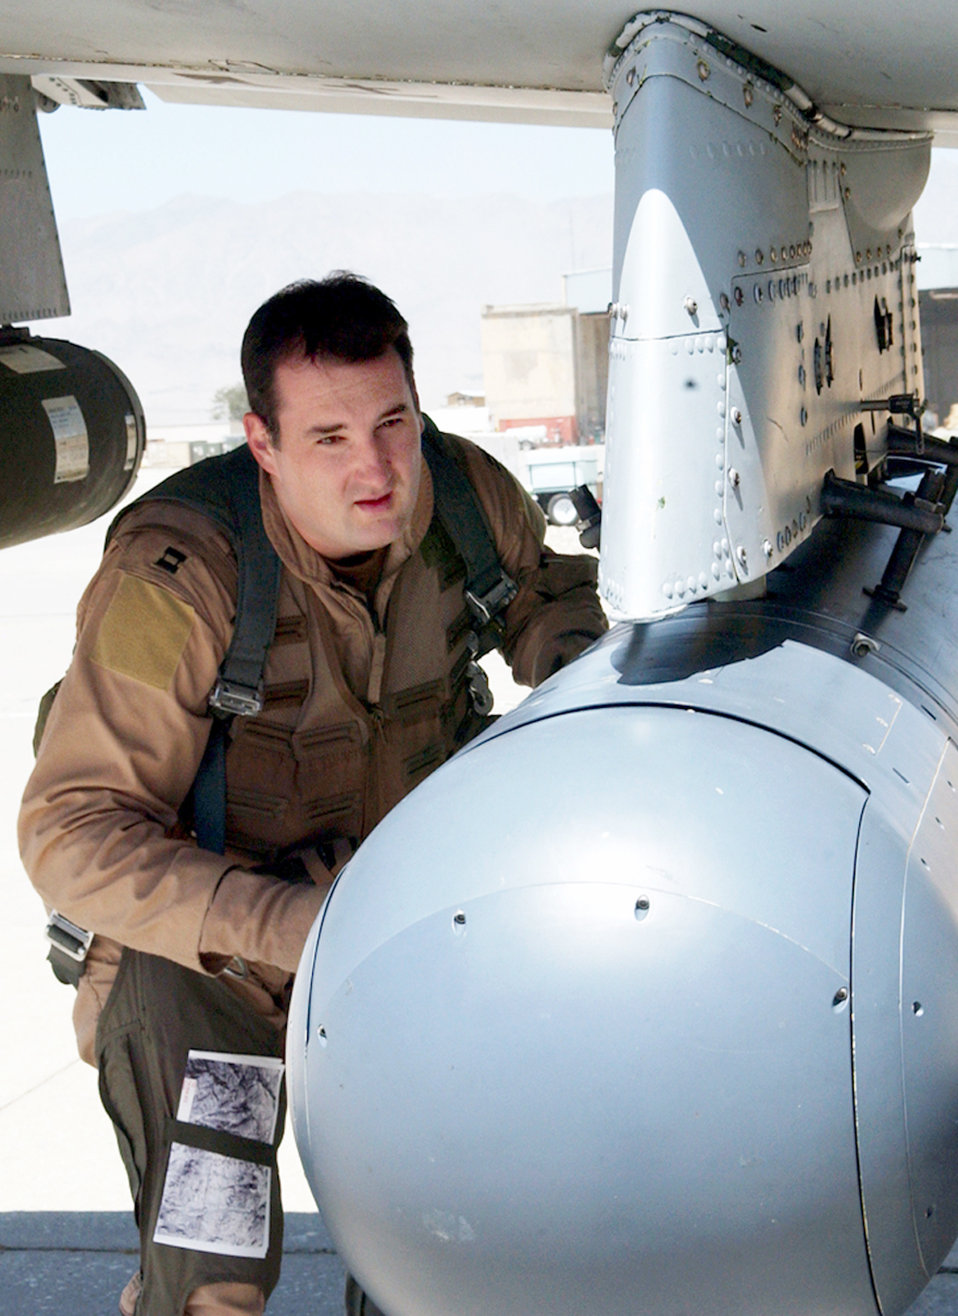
A-10 pods help track bad guys, protect friendly forces

BAGRAM AIR BASE, Afghanistan -- Capt. Keith Wolak checks the Litening precision targeting pod on his A-10 Thunderbolt II before flying a mission from here. He is an A-10 pilot assigned to the 355th Expeditionary Fighter Squadron supporting Operation Enduring Freedom.